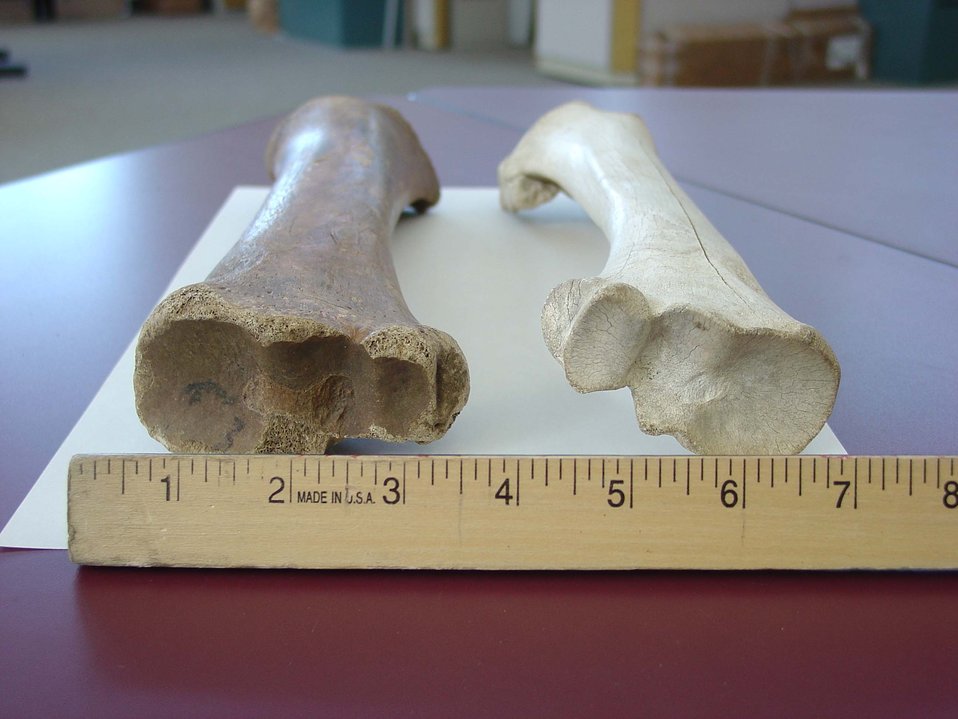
Bison bone compared to domestic cattle bone

Close view with measurement of brown Bison bone compared in size to corresonding white domestic cattle bone.